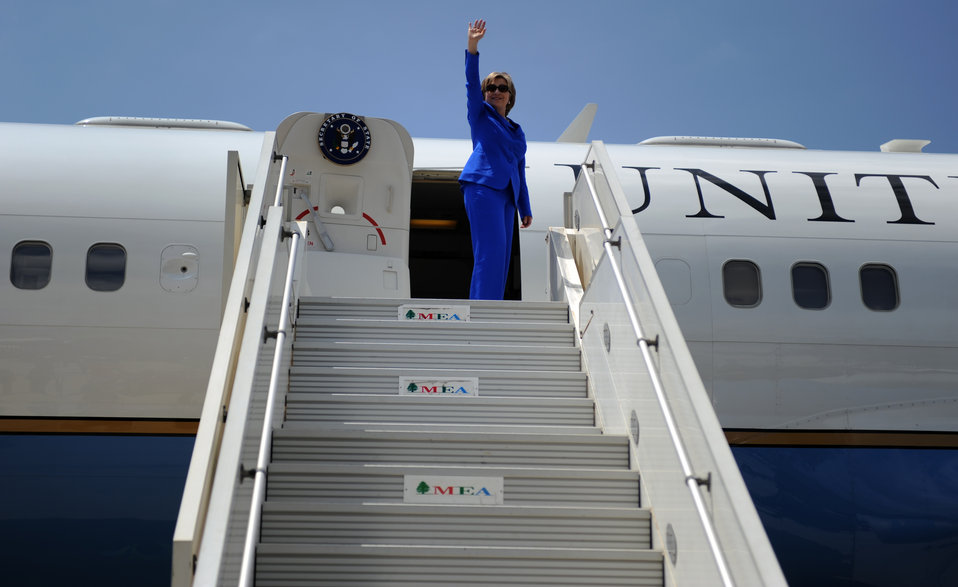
Secretary Clinton Departs Lebanon

U.S. Secretary of State Hillary Rodham Clinton boards plane in Beirut, Lebanon before returning to Washington, DC April 26, 2009.